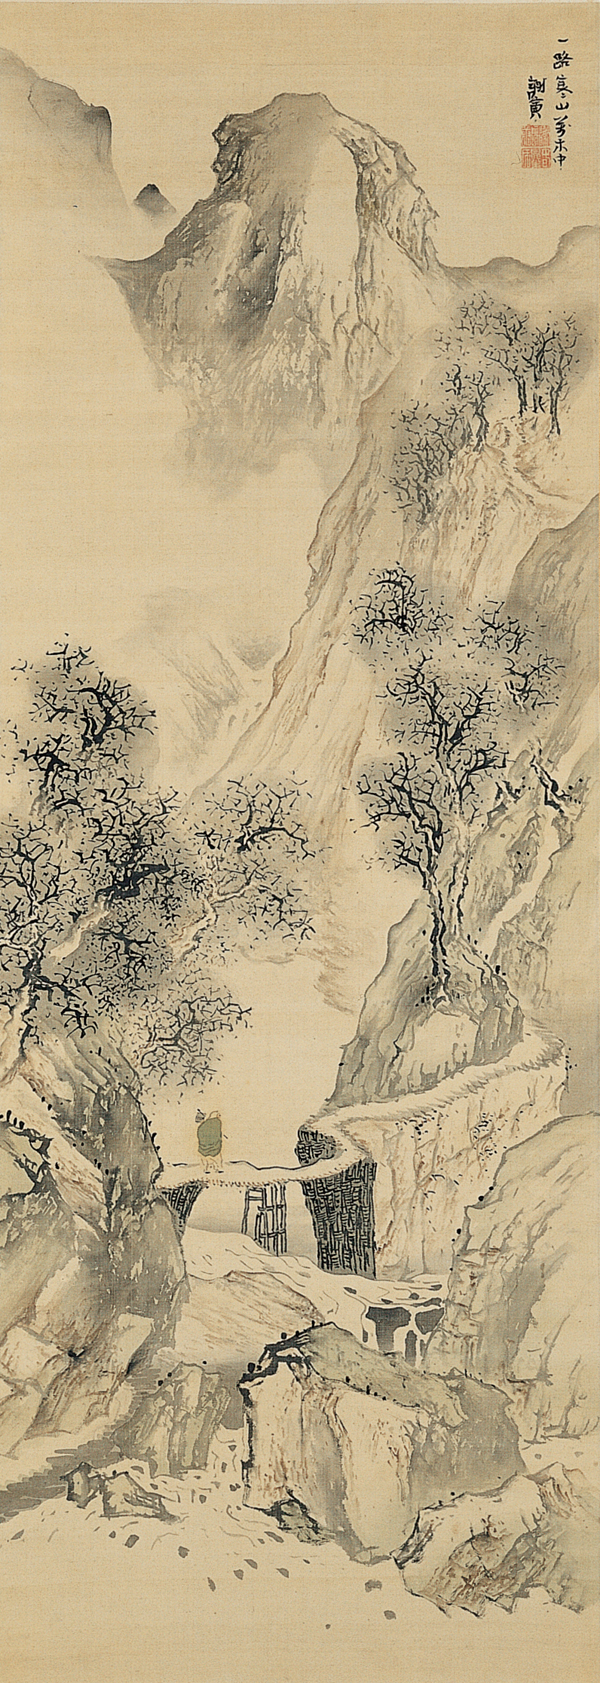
'Landscape with a Solitary Traveler' by Yosa Buson